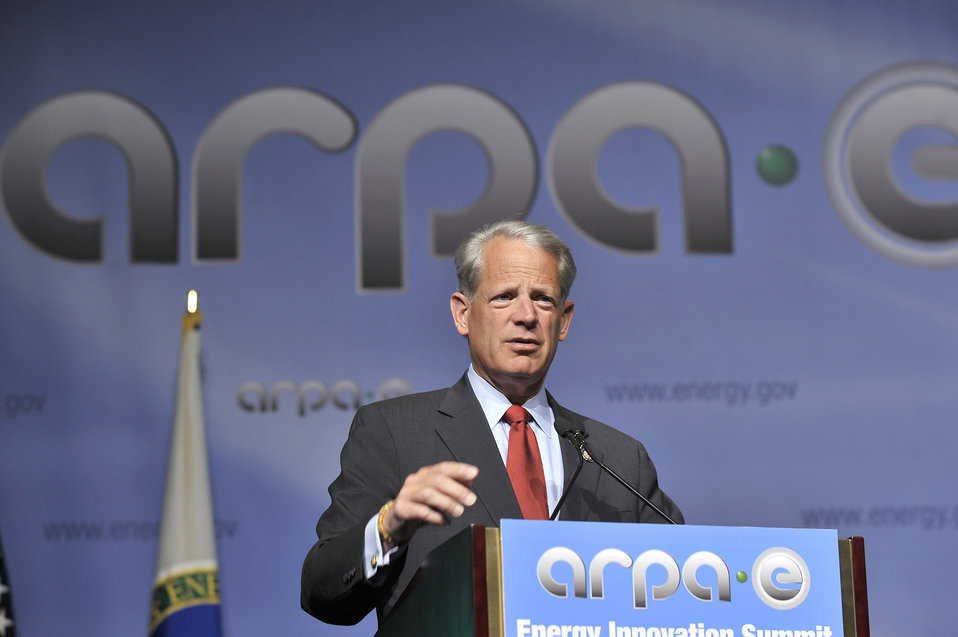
ARPA-E Energy Innovation Summit 2011, 83 of 83

Representative Steve Israel (D-NY).